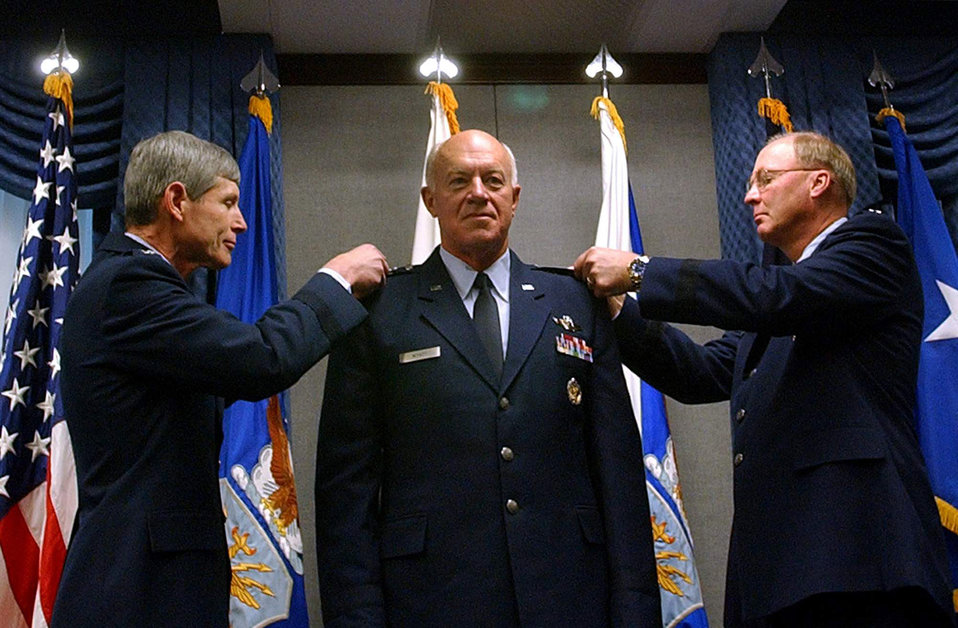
New Air Guard director promoted in Pentagon ceremony

General Norton Schwartz (left) and Gen. Craig R. McKinley (right) pin lieutenant general stars on Lt. Gen. Harry M. Wyatt III during a Feb. 2 ceremony at the Pentagon. General Schwartz is the Air Force chief of staff, and General McKinley is the chief of the National Guard Bureau. General Wyatt was named the director of the Air National Guard, and previously served as the adjutant general of the Oklahoma National Guard.